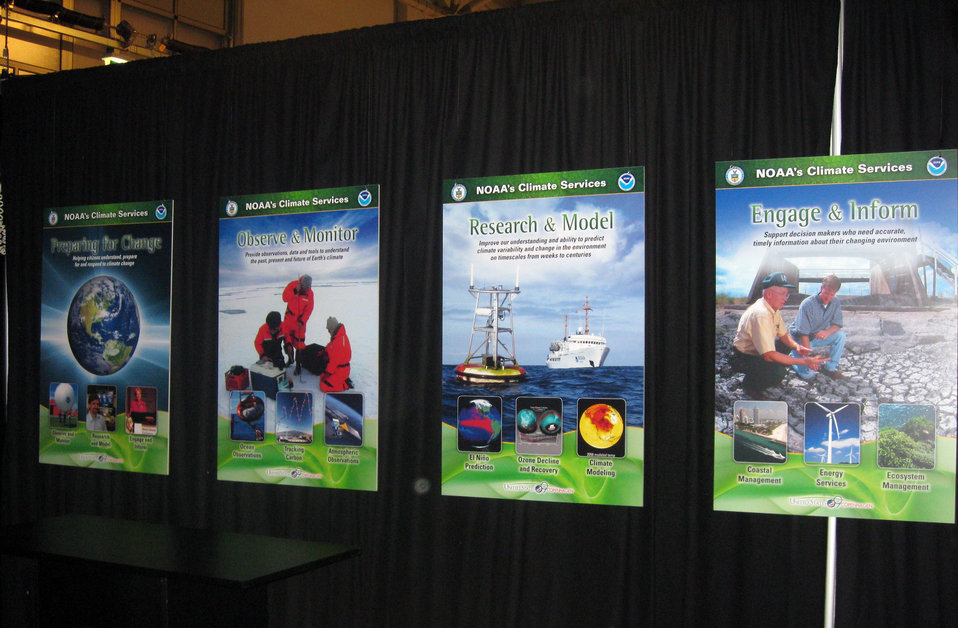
NOAA poster display at the U.S. Center at COP15 (Conference of the Parties to the UN Framework Convention on Climate Change) in Copenhagen, Denmark December 10, 2009.